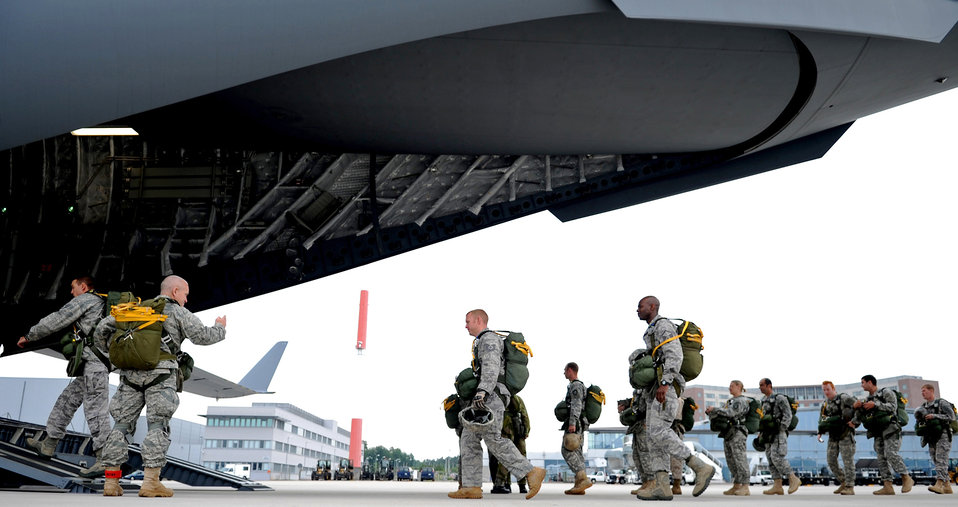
Ramstein Airmen participate in NATO jump

U.S. Air Force Airmen and U.S. Army Soldiers board a C-17 Globemaster III at Ramstein Air Base, Germany, for an airborne jump June 14, 2010. Five NATO countries participated in the annual event to support one of U. S. Air Forces in Europe's top priorities, building partnerships.